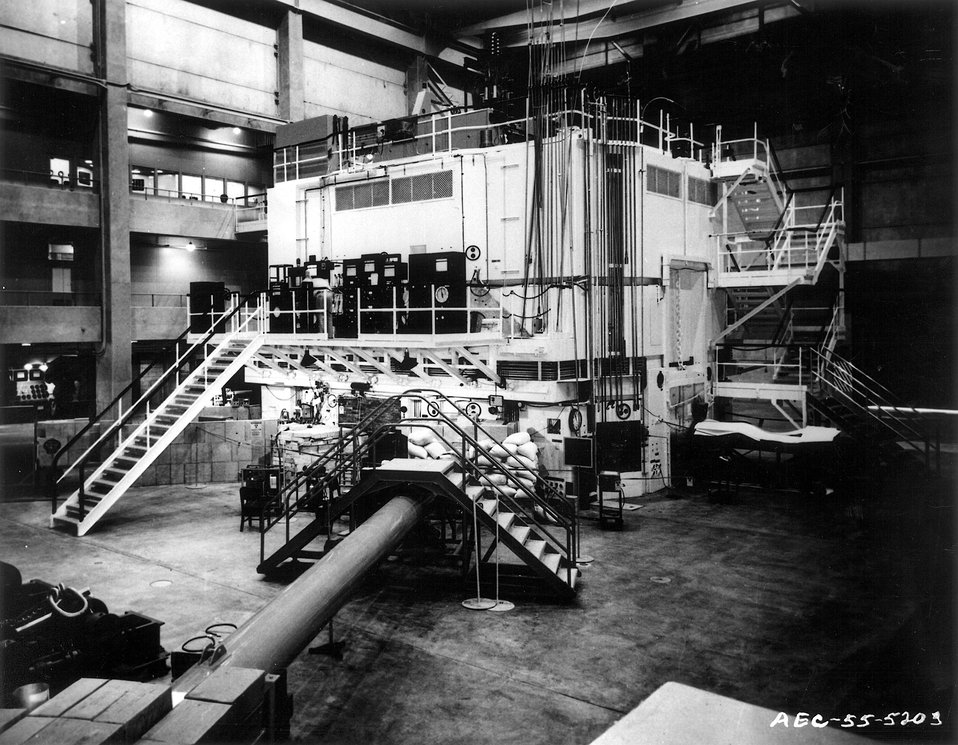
National Reactor Testing Station, Idaho... The Materials Testing Reactor from the south-east corner of the building. Circa 1955.